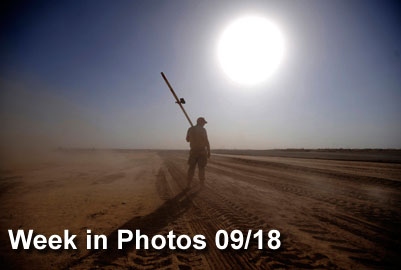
Week in Photos 9/18

Air Force Week in Photos for Sept.18 highlights photos from around the Air Force. In this photo by Staff Sgt. Shawn Weismiller, Airman 1st Class Davis Smith carries a guide used in airfield construction at Forward Operating Base Dwyer, Afghanistan.